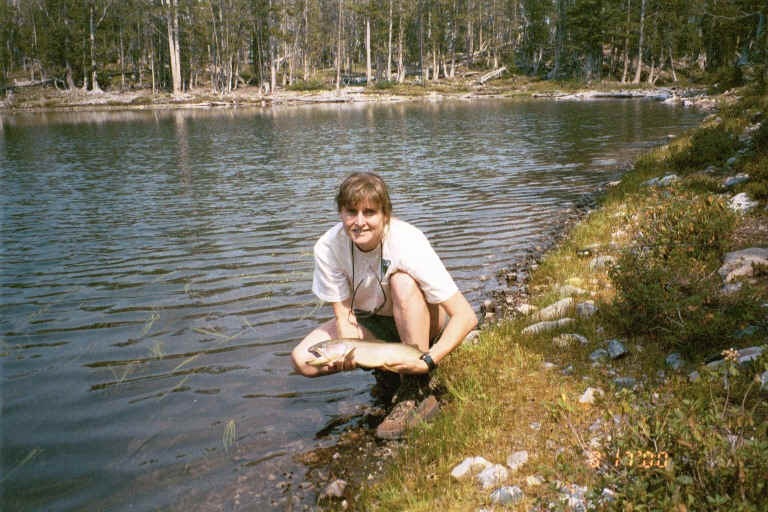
People Salmon Field Office UCSC Upper Columbia Salmon Clearwater District